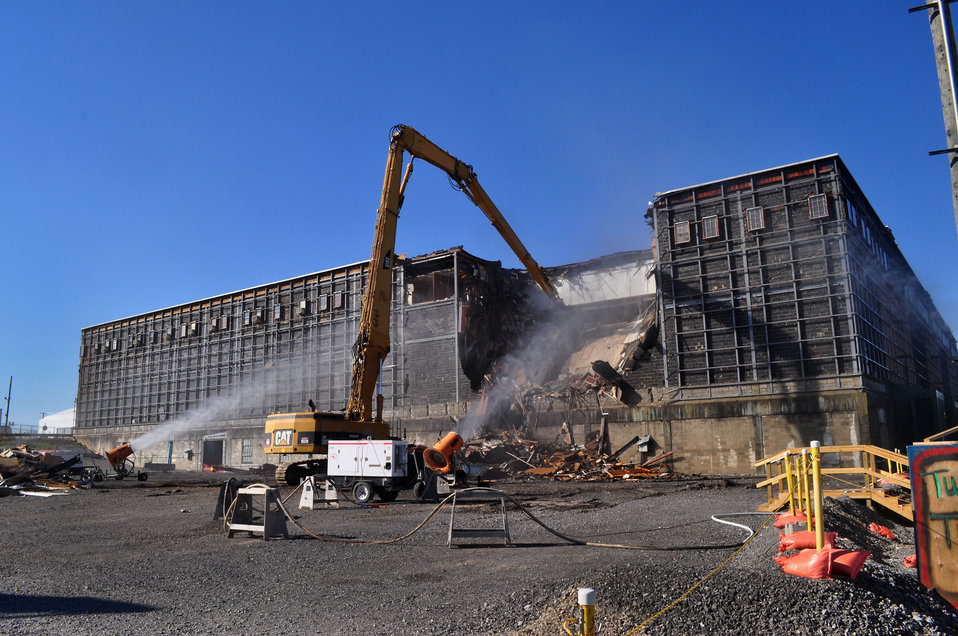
10

K-25 North Tower